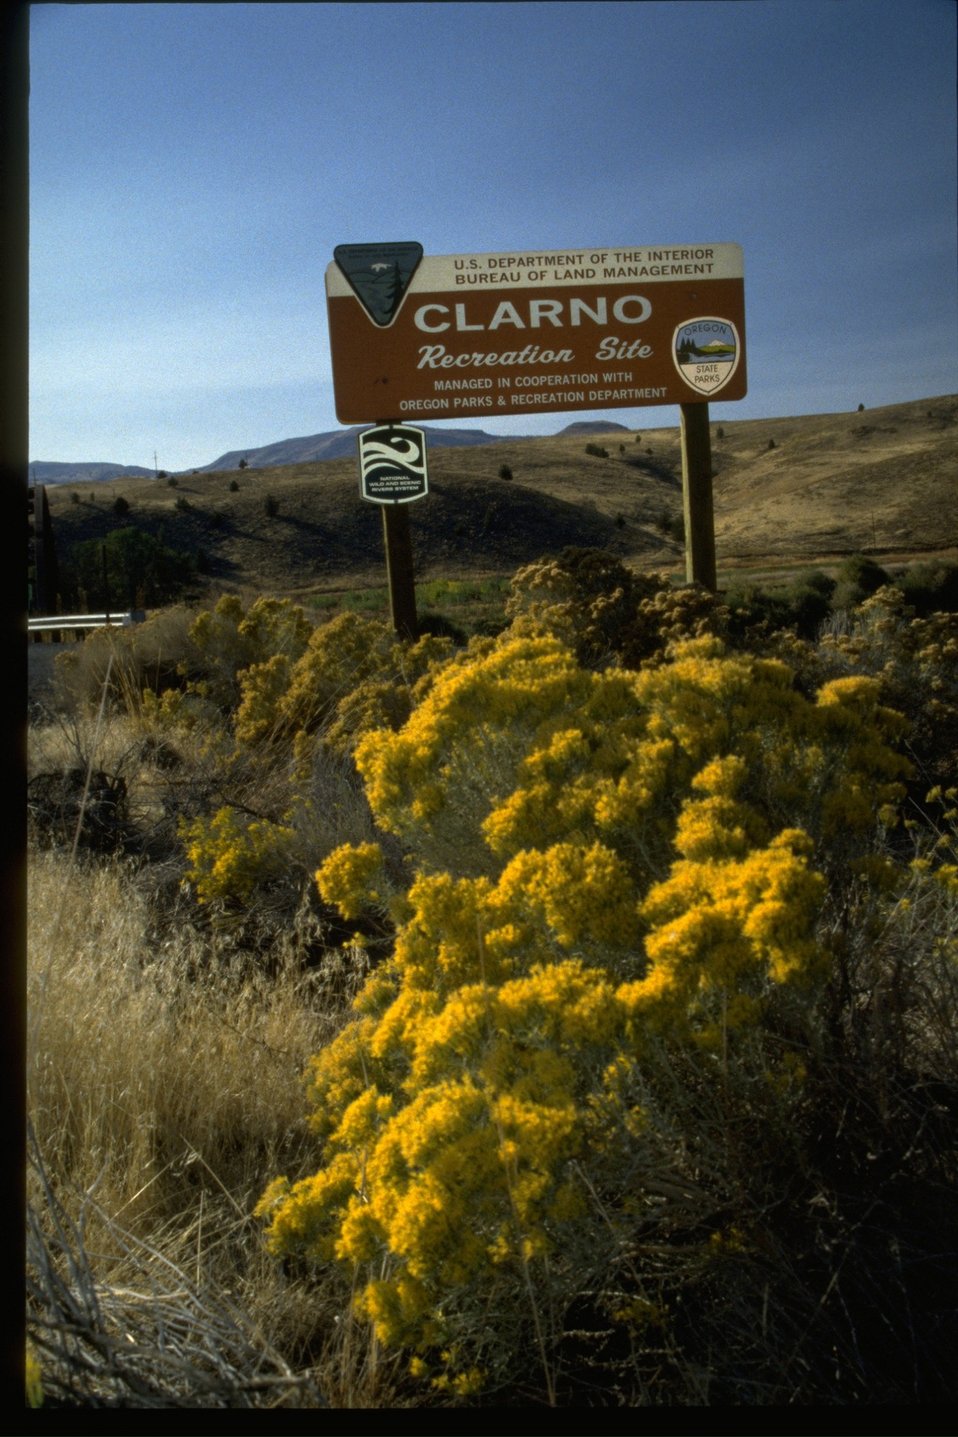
Clarno Recreation Site sign near the John Day River.